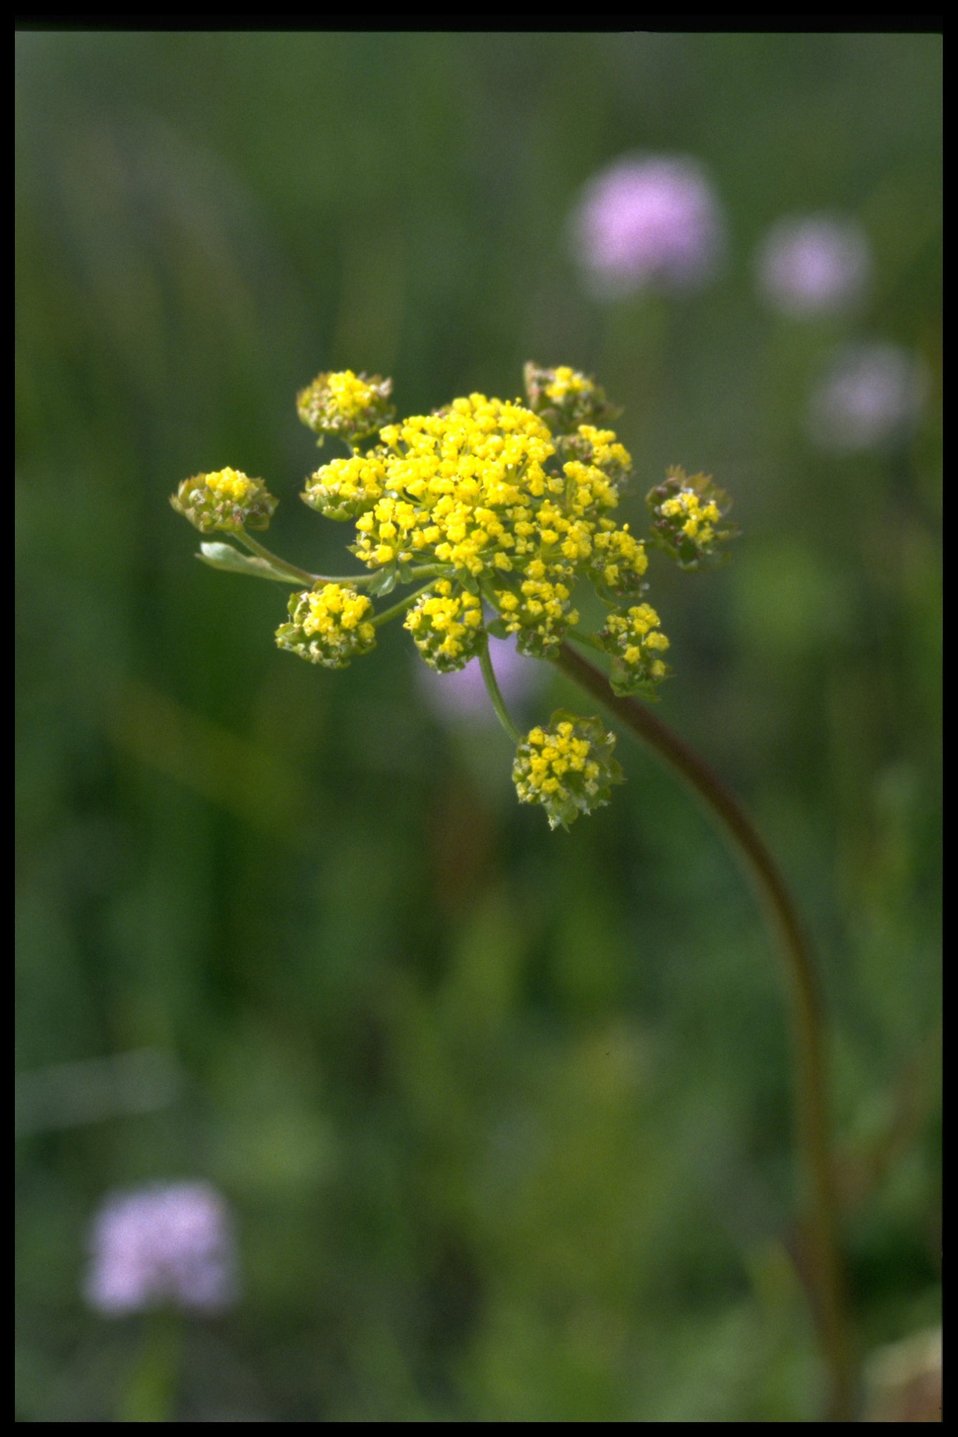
Closeup shot of Lomatium ultriculatum.